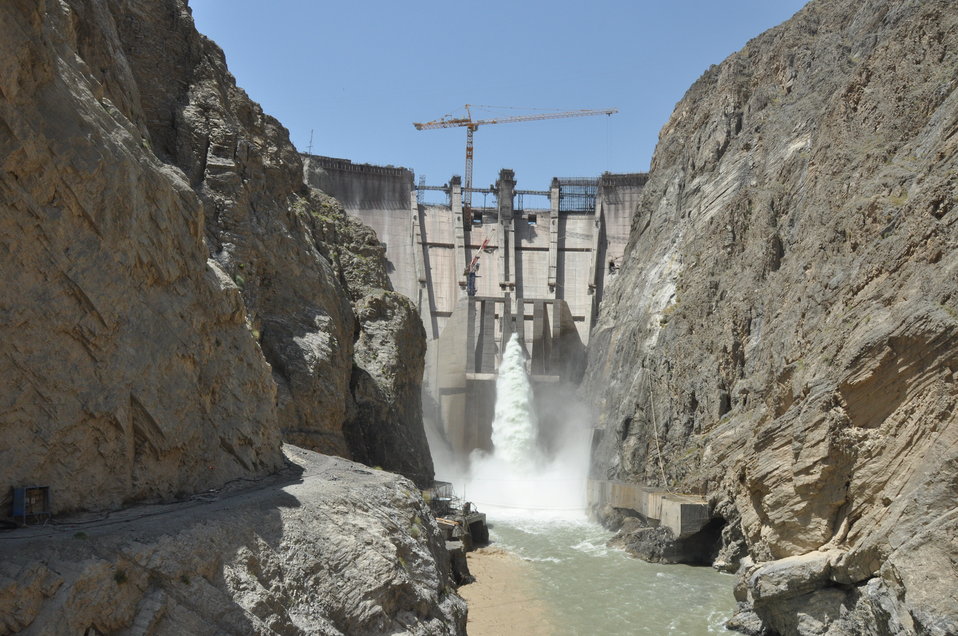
Gomal Zam Dam

April 21, 2011 - USAID’s Pakistan Mission Director Andrew Sisson and Director General of the Frontier Works Organization, Major General Najeeb Ullah Khan, visit the construction work at the Gomal Zam Dam. The United States Agency for International Development (USAID) is providing $40 million to finance the completion of the dam, transmission line, and hydropower components of the project.